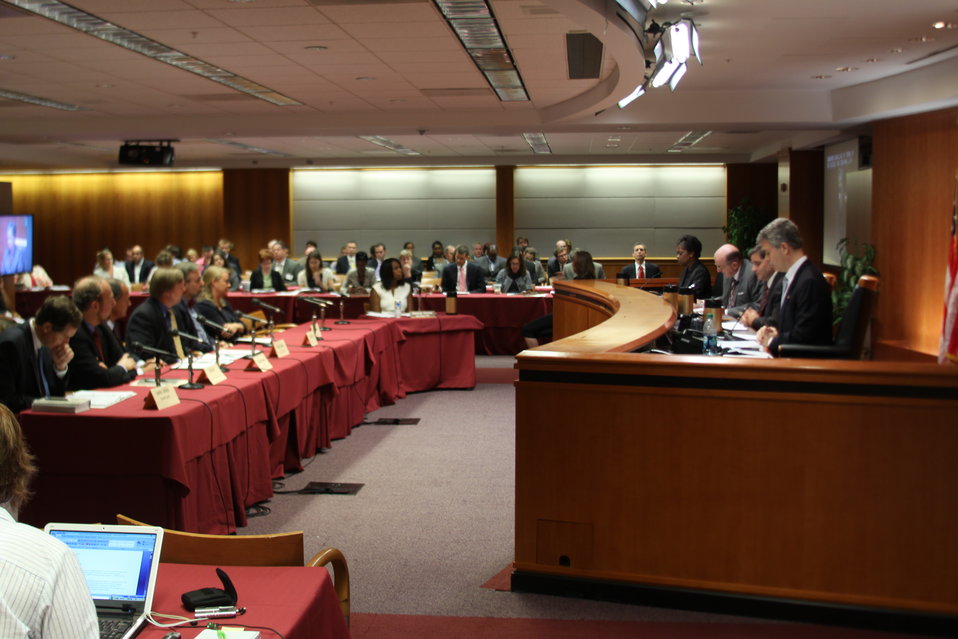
7/12/2011 Open Commission Meeting

The Consumer and Governmental Affairs Bureau's remarks regarding Billing for Unauthorized Charges ('Cramming') at the July 2011 Open Commission Meeting